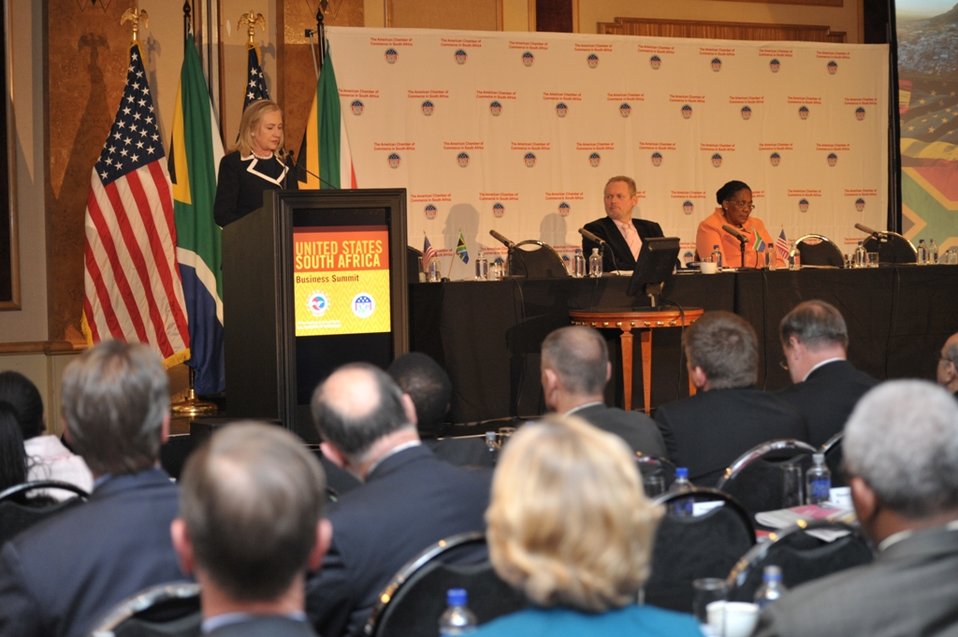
Secretary Clinton Delivers Remarks at the U.S.-South Africa Business Partnership Summit

U.S. Secretary of State Hillary Rodham Clinton delivers remarks at the U.S.-South Africa Business Partnership Summit in Johannesburg, South Africa, on August 6, 2012.